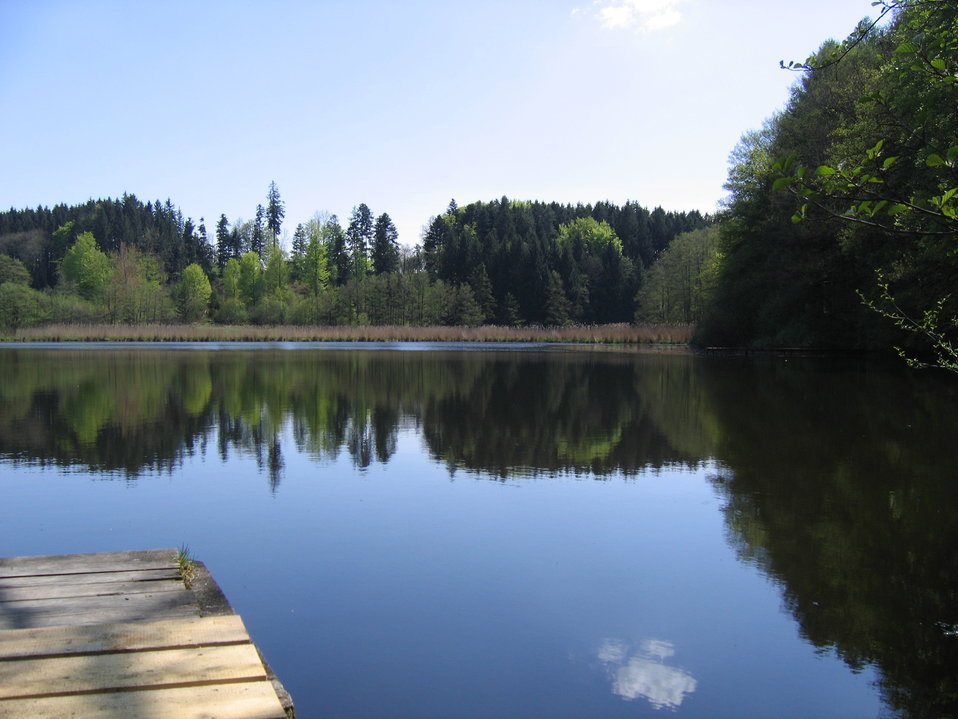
Deutsch: Deutschland - Baden-Württemberg - Bodenseekreis - Neukirch: Jägerweiher